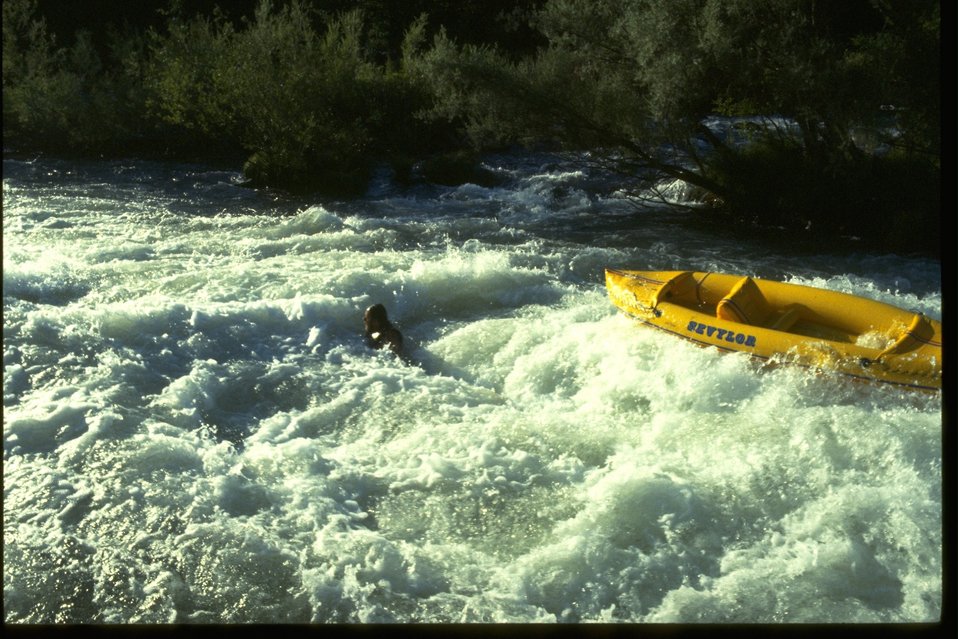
MAN OVERBOARD--Kayaking on the whitewater rapids of Nugget Falls on the Rogue River.